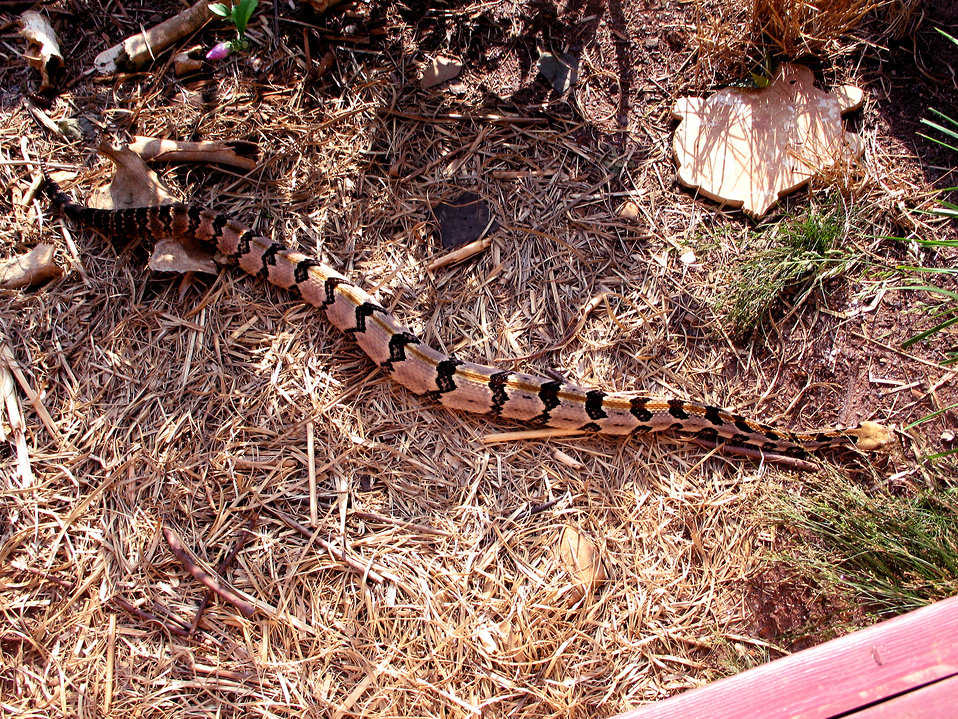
This 2005 image depicted a 'timber rattlesnake', Crotalus horridus, a large, heavy bodied, banded rattlesnake that ranges throughout a large portion of eastern and central North America, placing it in hurricane-prone areas, which is of importance to those living in these regions, and first-responders offering aid to those affected by such a disaster.Its ground color varies across its geographic range, but is generally yellow to tan with variable amounts of black stippling (Connant 1975). With its long fangs, it's able to introduce large amounts of potent venom per bite. Laboratory and field evidence suggest that the venom from individuals originating from certain populations in the South contain larger fractions of neurotoxic peptides than their northern counterparts (Tennant, 1998). The preferred habitat of the species varies across the range and includes upland deciduous forests, rocky ridges, riparian corridors, cypress swamps, cane reed thickets and wet prairie regions.